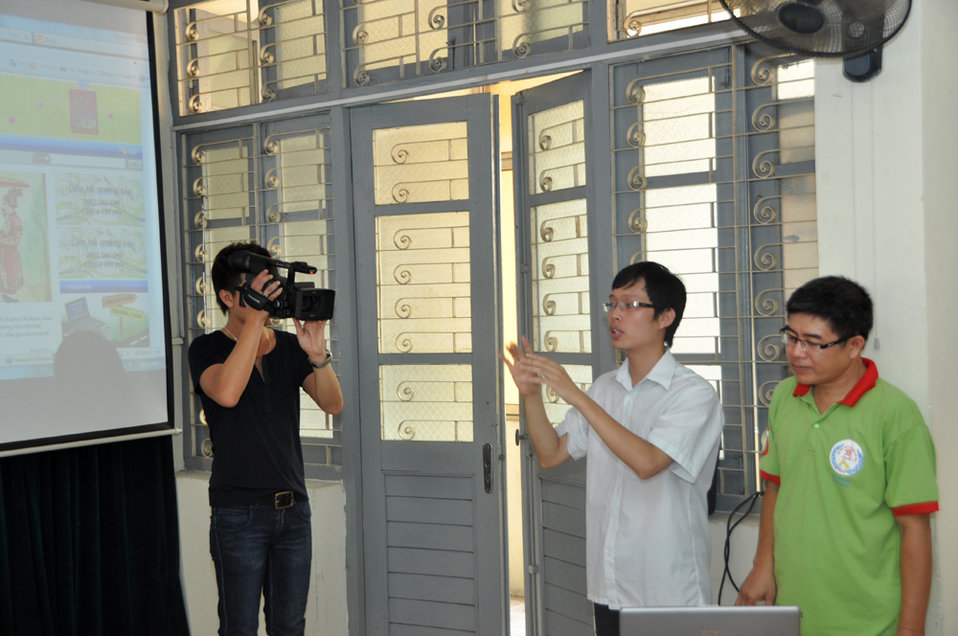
Hearing Impaired Graduates in Hanoi showcase the websites they developed